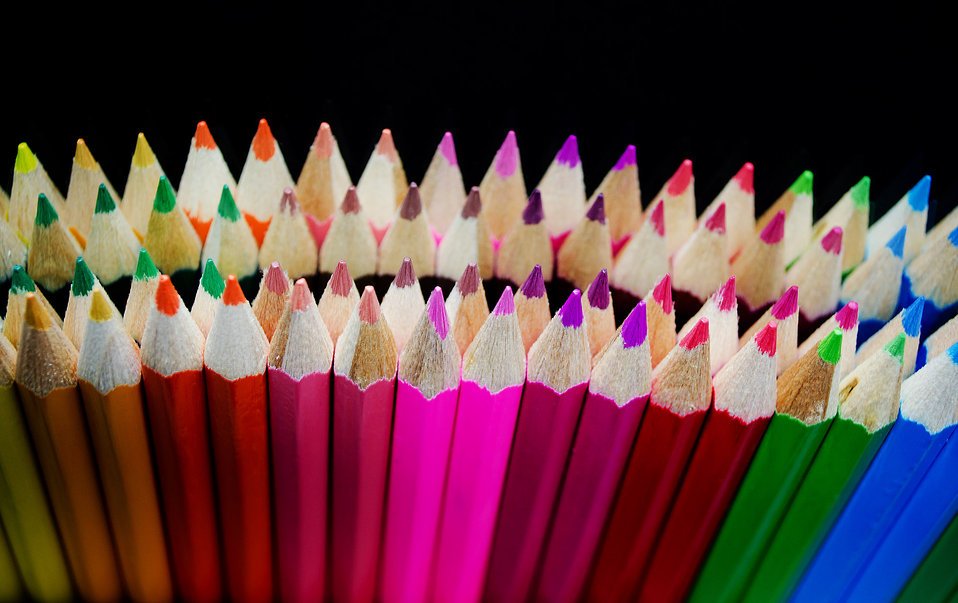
Colour pencils.